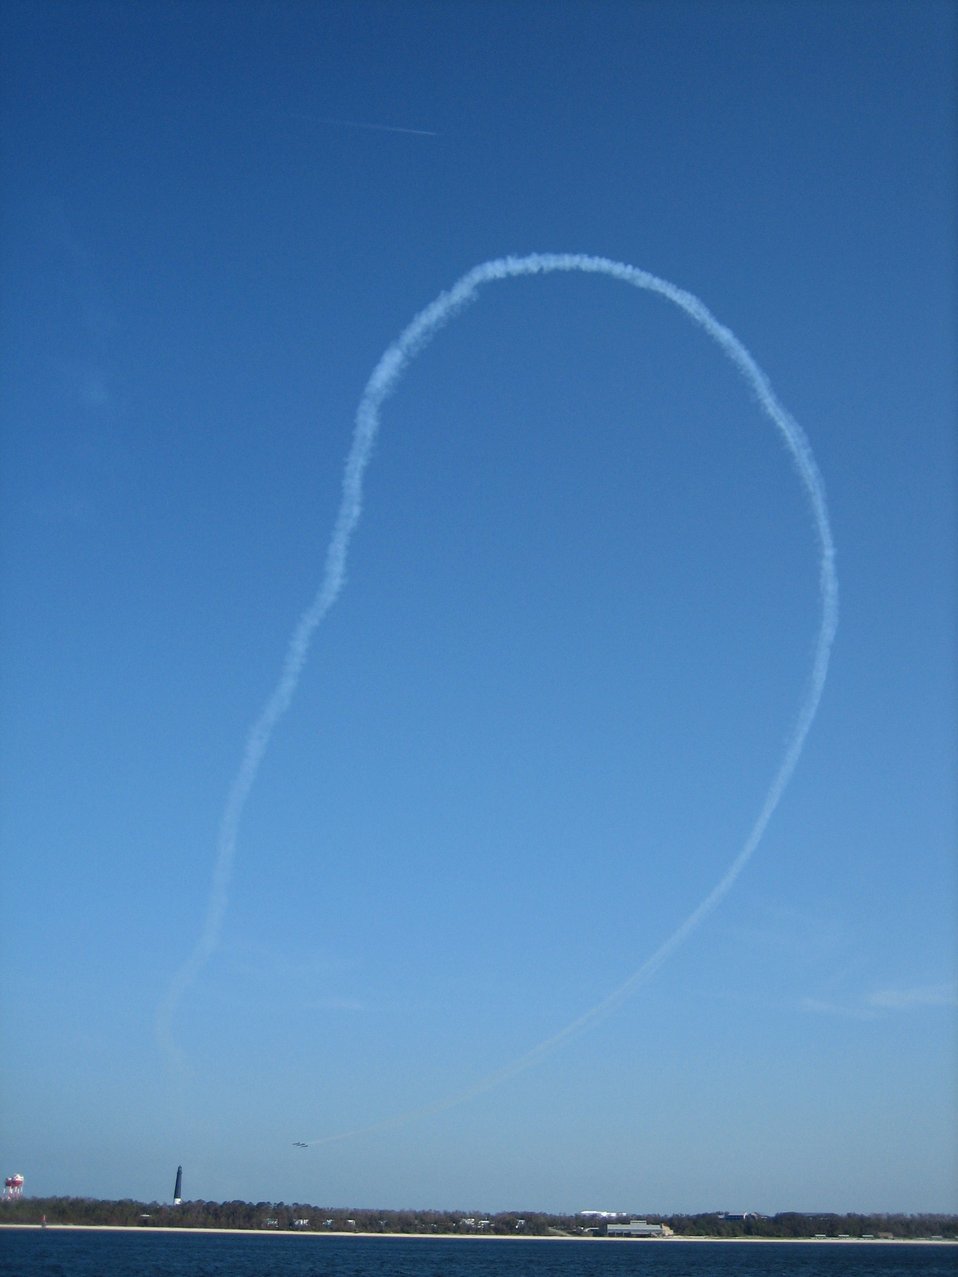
Navy Blue Angels practicing maneuvers with Pensacola Lighthouse in the left center of photo.